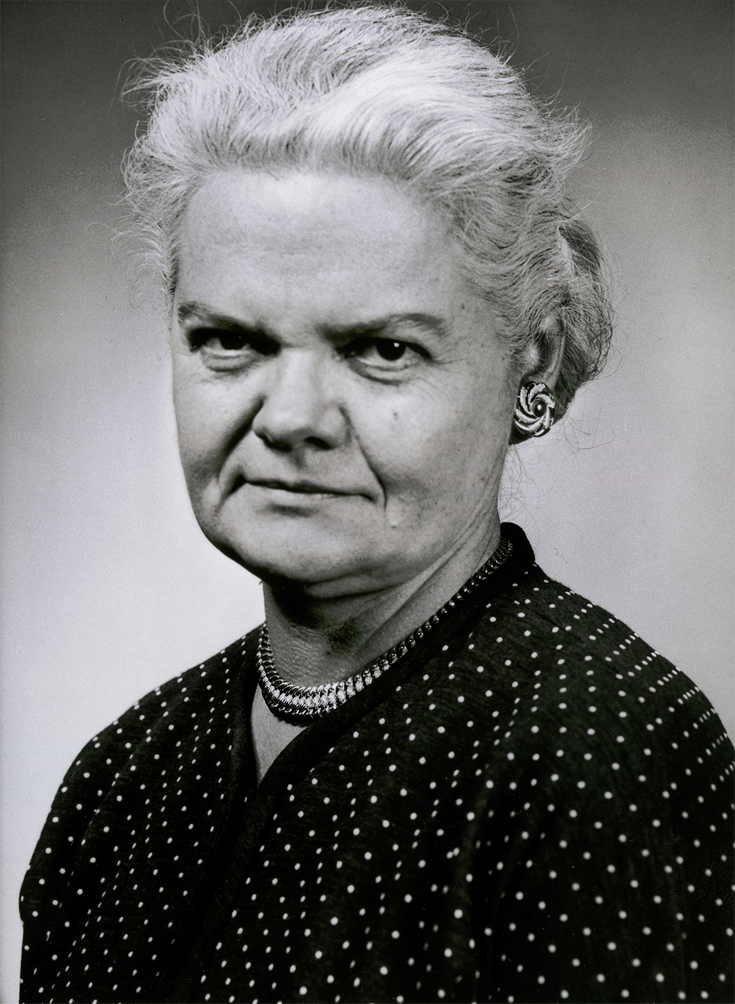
Lucille Farrier Stickel

Contaminant researcher Lucille Farrier Stickel, former director of the Patuxent Research Center at Patuxent Research Refuge in Maryland, where laboratories still bear her name. Rachel Carson drew on her research in writing 'Silent Spring.'